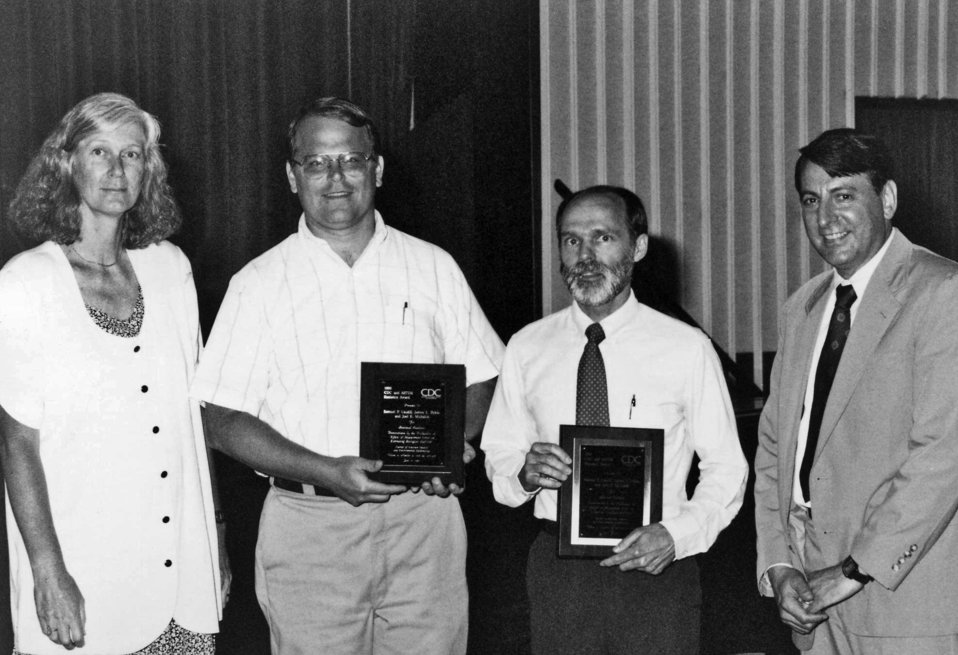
This photograph was taken during the presentation of the 1993 Centers for Disease Control's Statistical Achievement Awards ceremony.